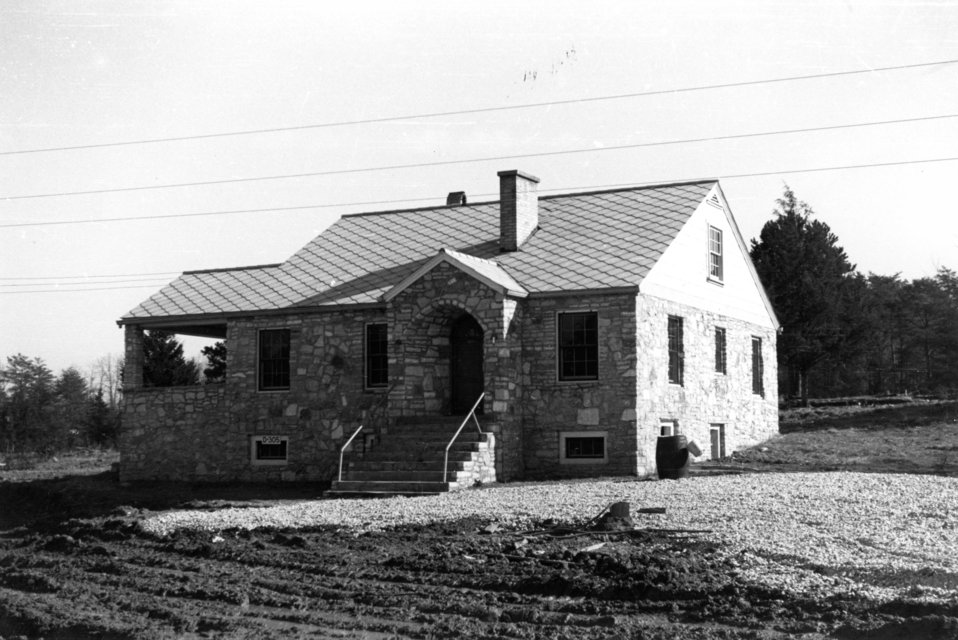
Early settlers at Oak Ridge